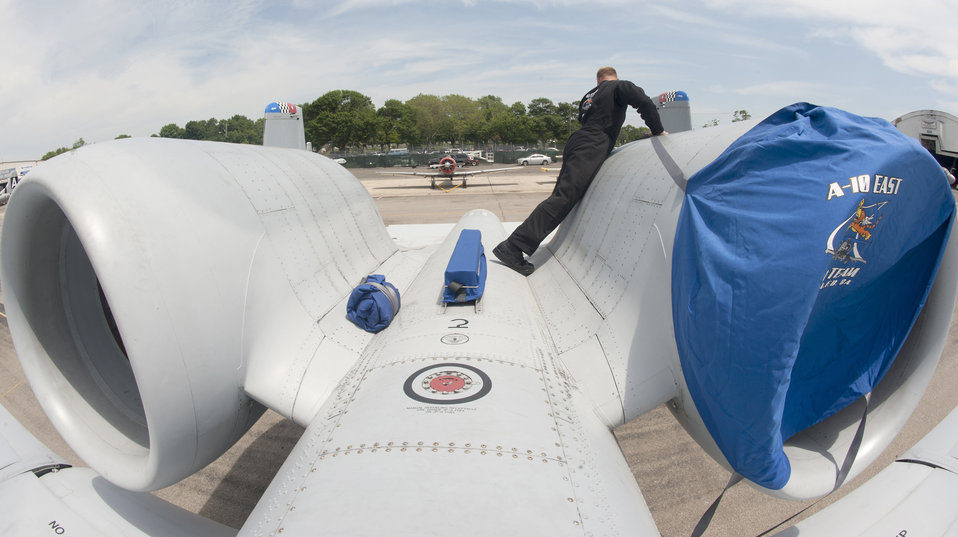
A-10 East Demonstration Team

Senior Airman Kyle Myers conducts postflight operations on an A-10C Thunderbolt II May 29, 2011, after an air show at Jones Beach, N.Y. Airman Myers is a crew chief for the A-10 East Demonstration Team.